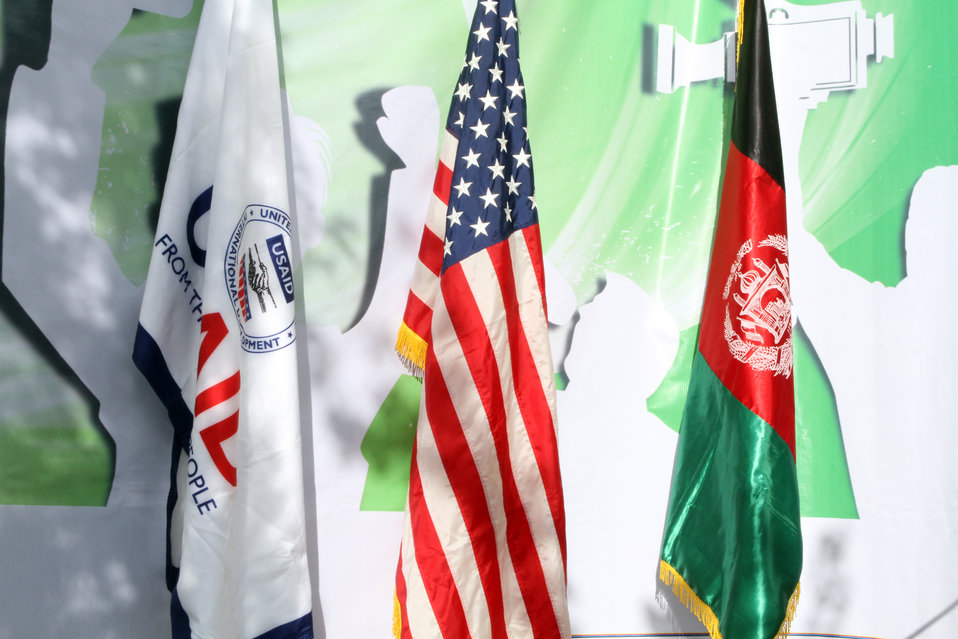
Afghan Youth Festival

Internews - USAID